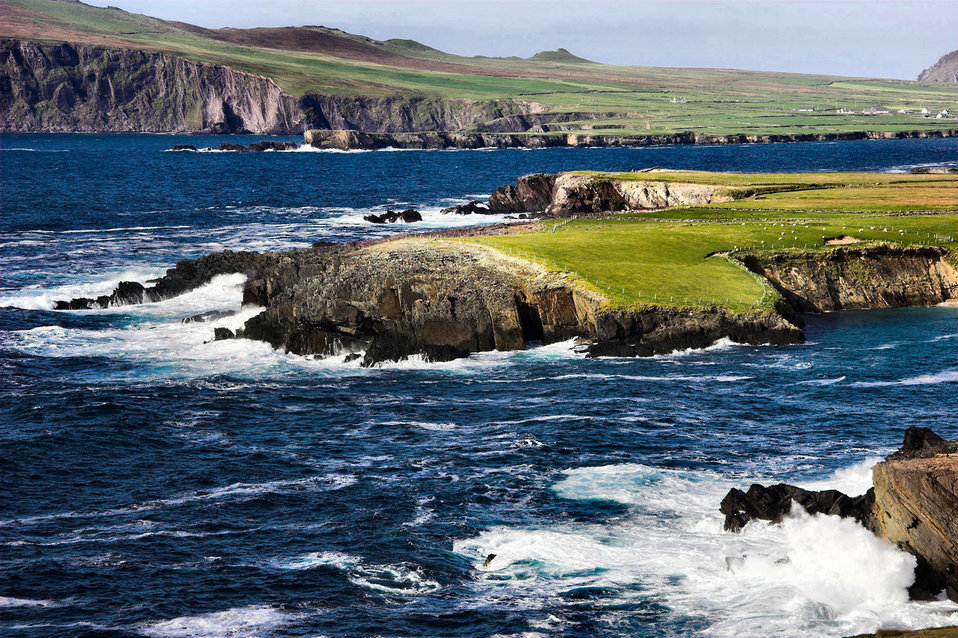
Wild grazing

Sheep grazing on the southwest coast of ireland.